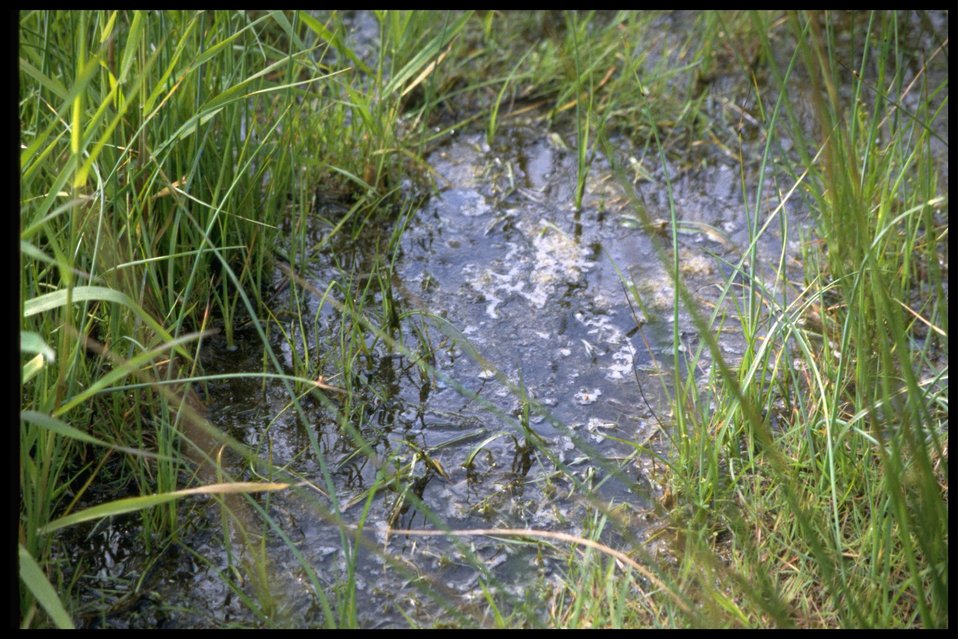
Chadwick Hill Marsh.